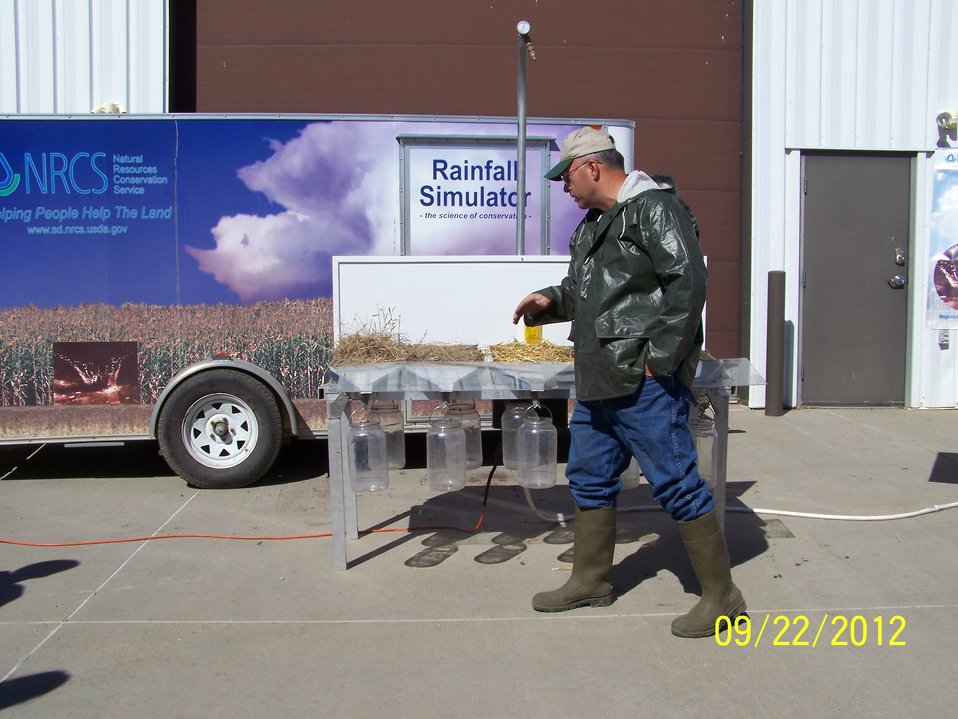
Prairie Fest 2012

NRCS demonstrating their rain simulator machine.